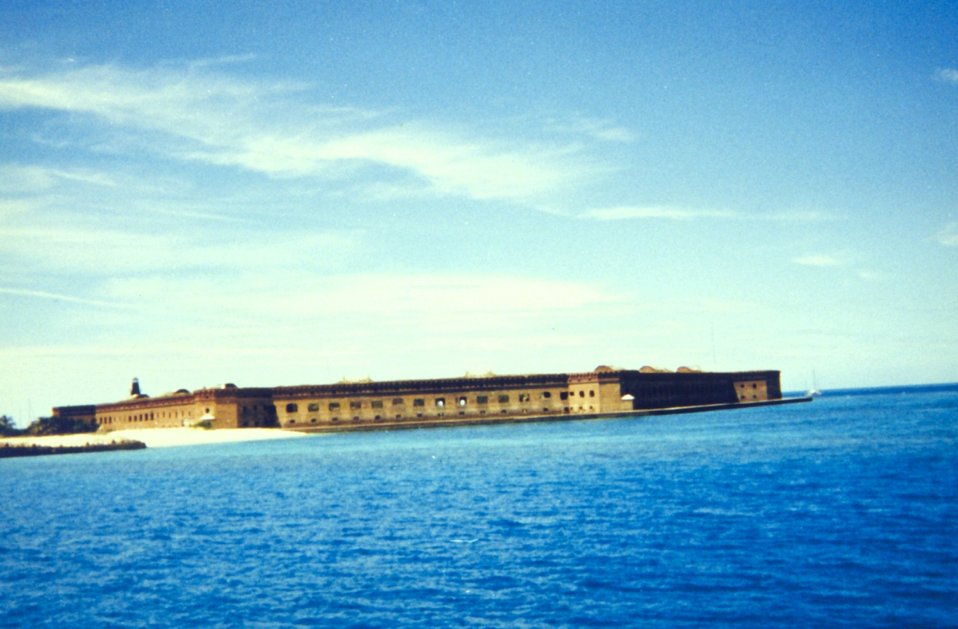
Approaching Fort Jefferson prior to disembarkation